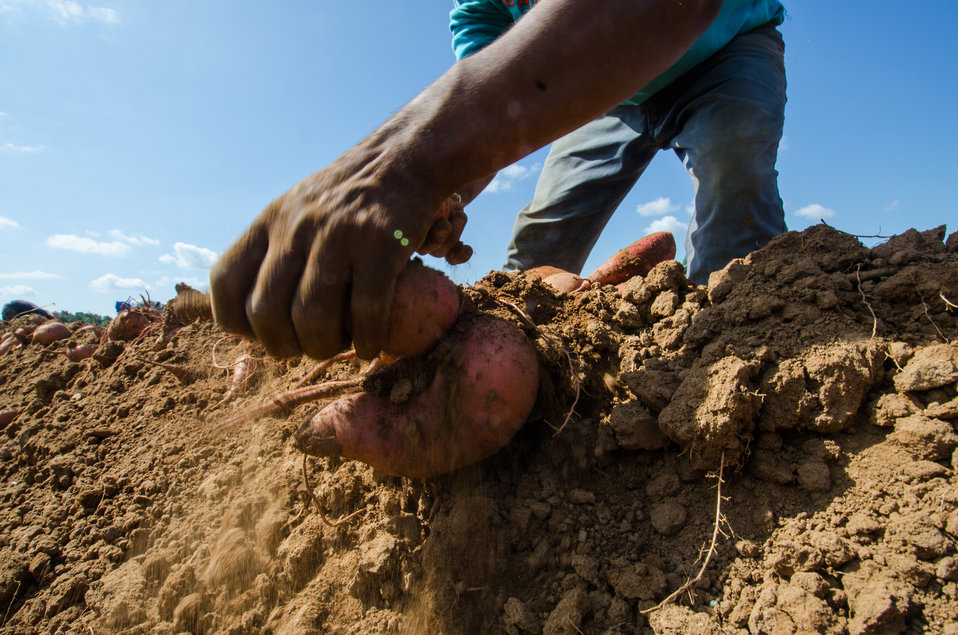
Harvested hand picked large sweet potatoes, at Kirby Farms in Mechanicsville, VA on Friday, Sept. 20, 2013. 200 acres of the farm are devoted to eggplant, spinach, beets, tomato, jalapeno peppers, melons and a variety of greens. Soybeans and small grain are grown on the remaining 300 acres. Using rotational crop practices allows Kirby Farms to double and triple crop yields. Wholesalers, who buy from this farm, sell the produce to major supermarkets in the Mid-Atlantic region, from North Carolina to Maryland. Restaurants in the local area prepare and serve the local bought produce to patrons in the Richmond, VA metropolitan area.